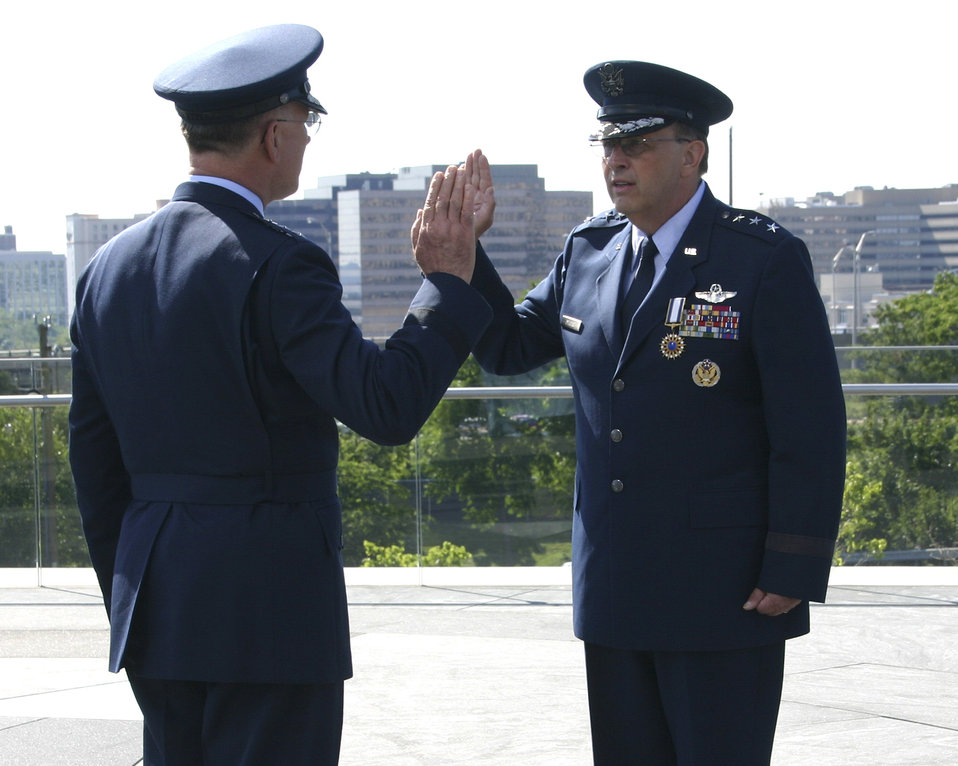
Stenner takes reins of Air Force Reserve

Lt. Gen. John A. Bradley administers the oath of office to Lt. Gen. Charles E. Stenner Jr. during the change of command ceremony in which General Bradley relinquished command to General Stenner. The ceremony was at the Air Force Memorial in Arlington, Va., June 24. General Bradley is the chief of Air Force Reserve.